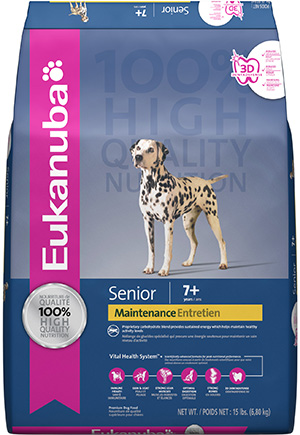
RECALLED – Dog and Cat foods - Dry

August 14, 2013 – Product Recall – P&G Voluntarily Recalls Limited Quantity of Dry Pet Food Due to Possible Health Risk.